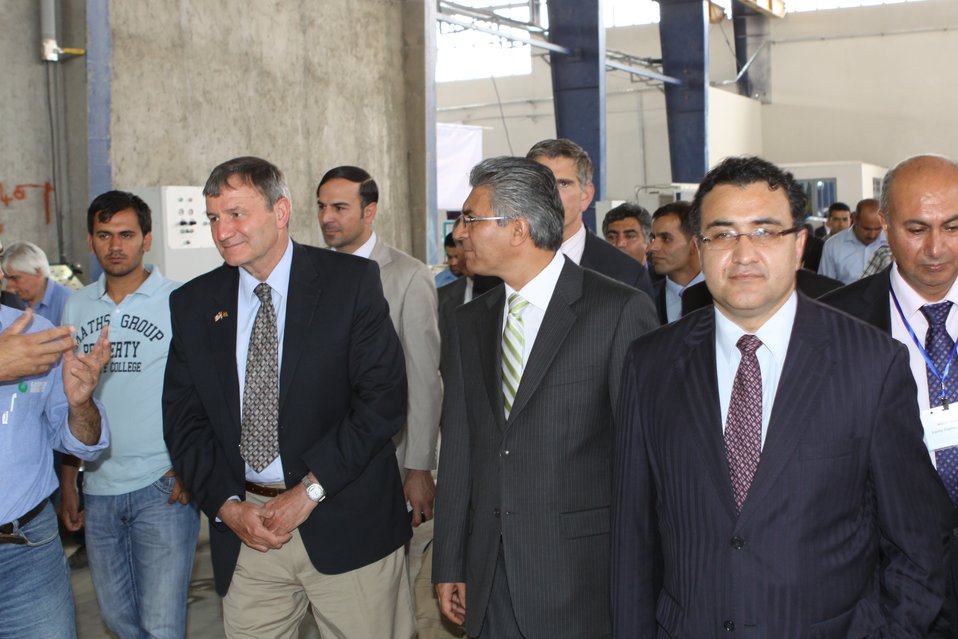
100525 Hirat Marble Conference 427